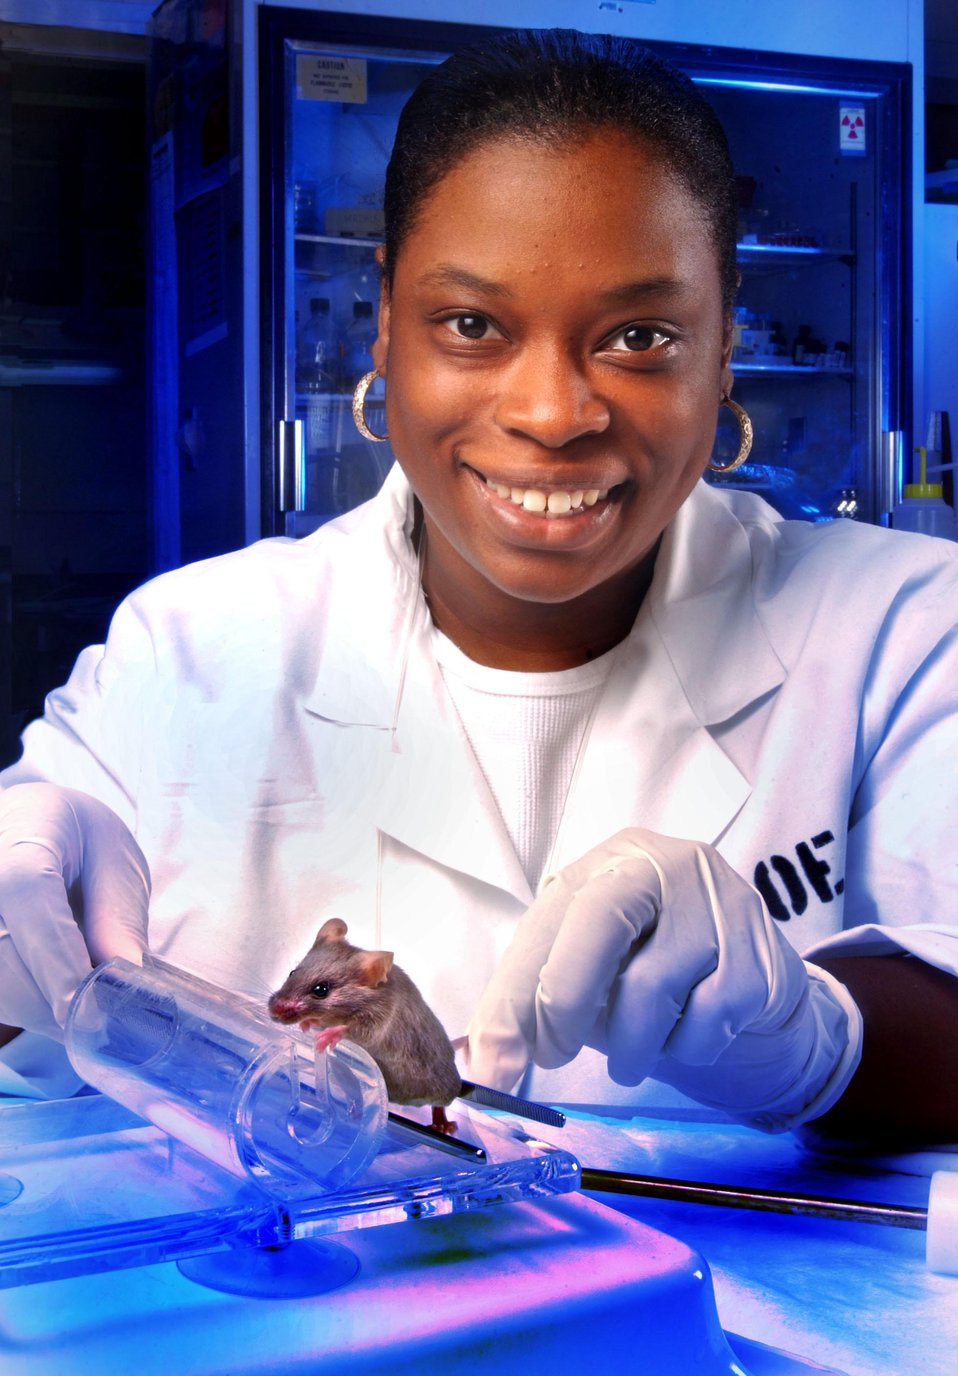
GRADUATE STUDENT FROM FLORIDA A&M UNIVERSITY WORKING FOR SIX MONTHS ON AN EDUCATION FELLOWSHIP AT ORNL.

THIS STUDENT IS CONDUCTING RESEARCH IN THE LIFE SCIENCES DIVISION AT DOE'S OAK RIDGE NATIONAL LABORATORY, WORKING TOWARD HER MASTER OF SCIENCE DEGREE IN ENVIRONMENTAL SCIENCE. HER TOPIC INCLUDES EVALUATING GENETIC AND NUTRITIONAL CONTROL OF OBESITY AND TYPE II DIABETES. OBESE MICE ARE STUDIED AND THEIR GENETIC MAKEUP AND ENVIRONMENTAL FACTORS ARE EVALUATED TO DETERMINE RISK FOR AND DEVELOPMENT OF DIABETES.